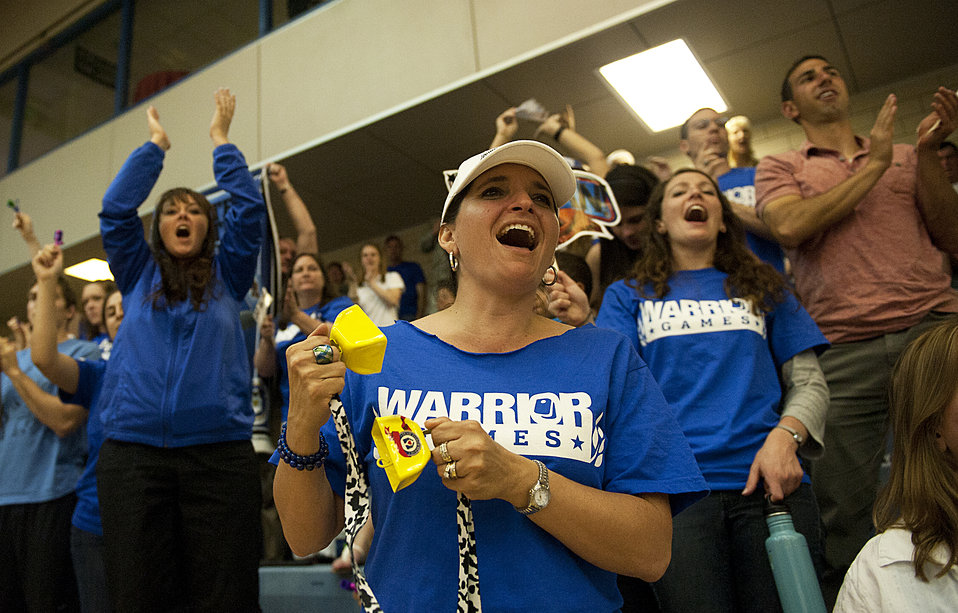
Warrior Games

Corina Gestring, foreground, and the crowd cheer the Air Force team during their sitting volleyball bronze medal game against the Special Operations Command team during Warrior Games 2012 at the U.S. Air Force Academy in Colorado Springs, Colo., May 3, 2012. Air Force won 25-12 and 25-20.